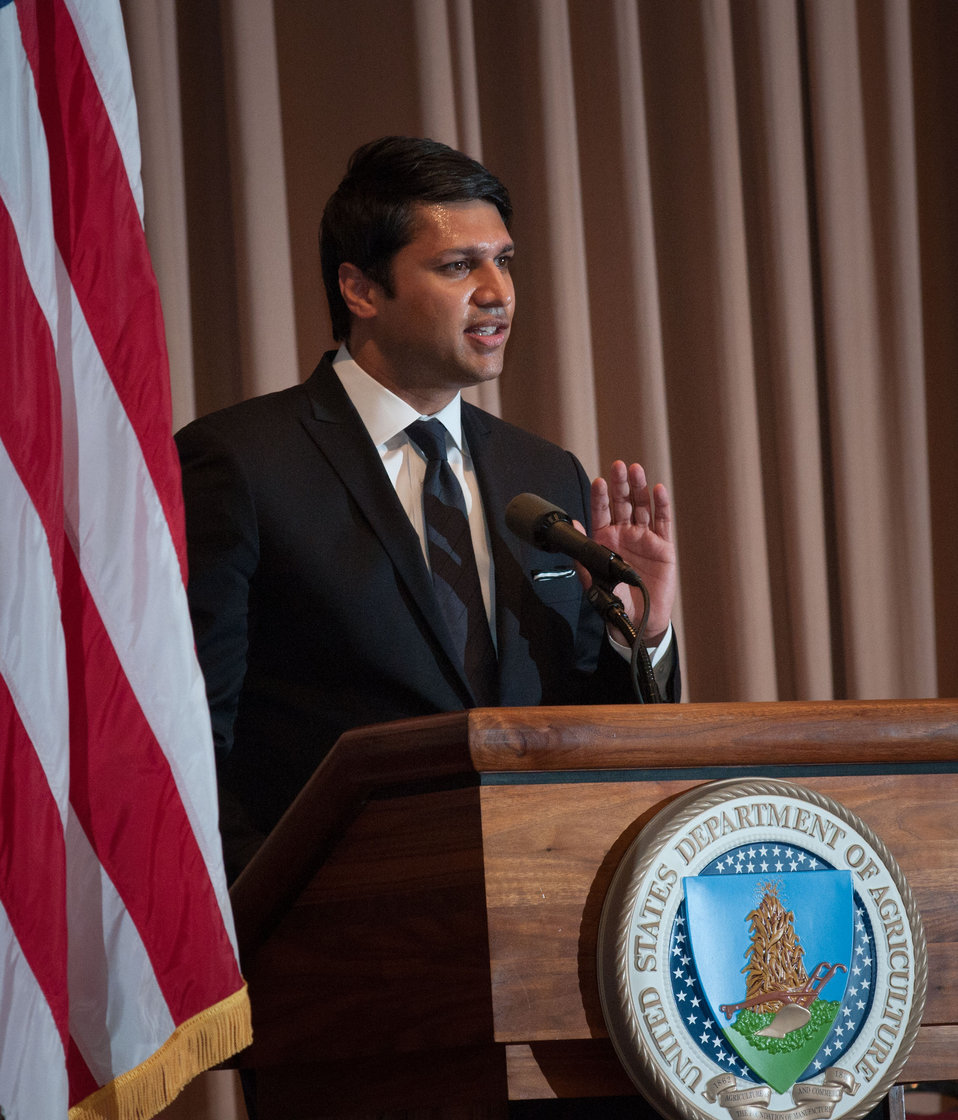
Graduation day of the 2011 U.S. Department of Agriculture (USDA) Executive Master Gardeners, on Tuesday, November 8, 2011 in Washington, DC. During the past six-weeks, students contributed 40-hours of volunteer time, completed studies and testing to receive their certificates today as an Executive Master Gardener. Many of the sessions occurred before work hours, during lunchtime or at community garden project sites such as Powell Middle School. USDA challenges its employees to establish People's Gardens at USDA facilities worldwide or in community gardens. People's Gardens vary in size and type, but all have a common purpose - to help the community and the environment. To learn about the People’s Garden Initiative visit www.usda.gov/wps/portal/usda/usdahome?contentid=peoples g....